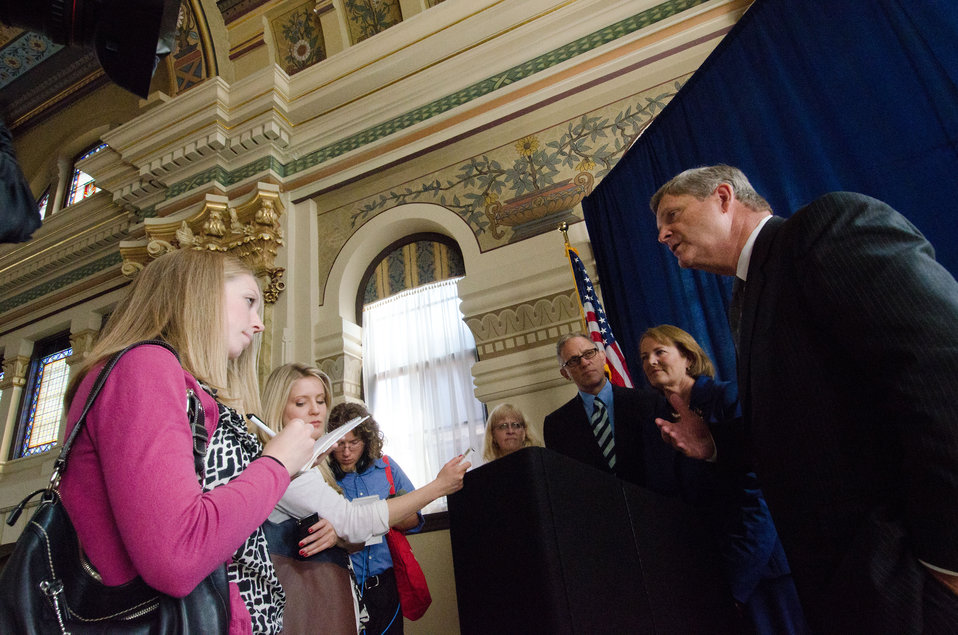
Agriculture Secretary Tom Vilsack meets with members of the press after speaking at the National Export Initiative (NEI) Small Business Tour in Milwaukee, WI, on Wednesday, August 3, 2011. An important goal of the NEI is to provide additional assistance to small and medium-sized businesses, which are major drivers of job creation. The NEI is assisting small and medium-sized businesses win more foreign government contracts, find buyers worldwide, participate in more trade missions and trade shows, receive more export financing, and learn new ways to sell products and services overseas.